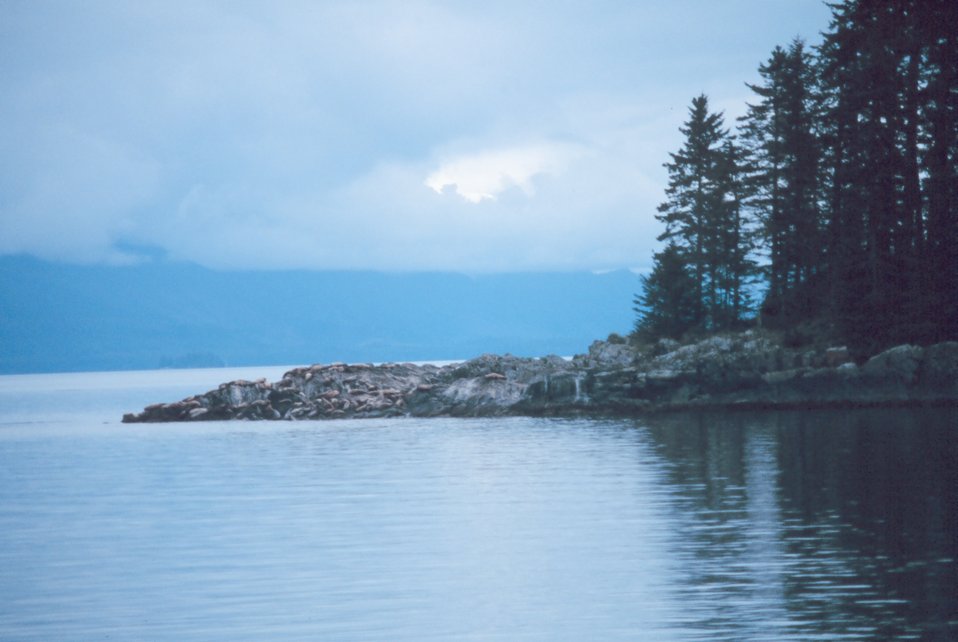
Steller sea lion - Eumetopias jubatus.